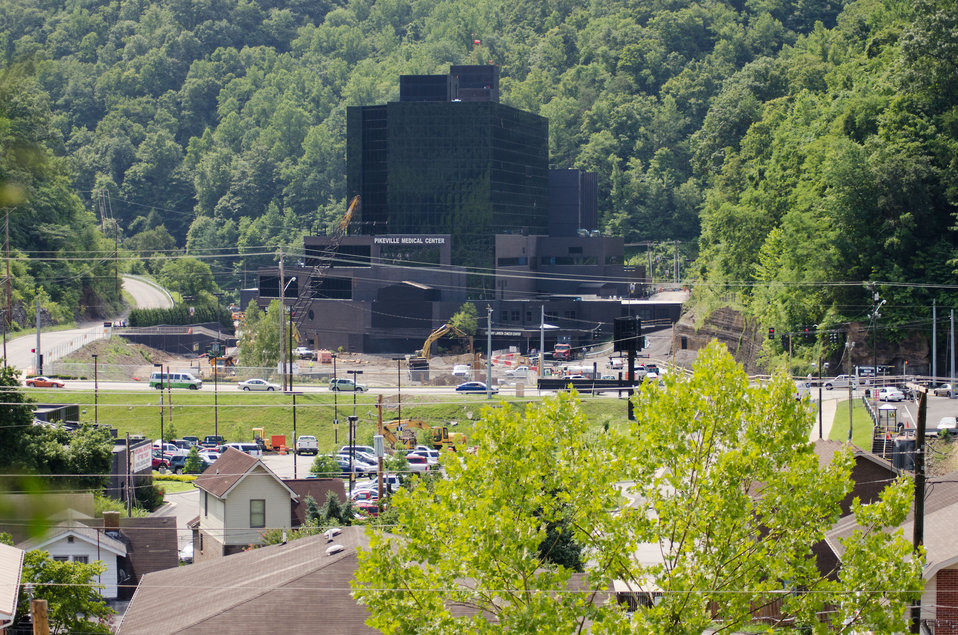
From across the horseshoe shaped town of Pikeville, KY, various buildings, parking lots, temporary walkways, and above ground construction of the Pikeville Medical Center (PMC) expansion project, on Tuesday, July 12, 2011, in Pikeville, KY. After months of infrastructure construction and rain delays, one of Kentucky’s largest American Recovery and Reinvestment Act (ARRA) projects is under way. The $44.6 million Community Facilities Loan will finance construction of a new medical office building and parking garage. The new medical office building will house outpatient surgery, endoscopy, surgical support and provide exam, waiting and office space for 23 primary and specialty care physicians. It also will contain a medical research center to support existing research – in conjunction with Pikeville College – on health disparities, genetic research related to the prevalence of cancer and other areas, including drug and treatment trials. The new parking garage with more than 1,000 spaces will be built adjacent to the new medical building, eliminating the need to shuttle patients back and forth from remote parking areas. The new garage will provide closer and easier proximity to medical and hospital services for all patients.
Wayne Rutherford, County Judge-Executive for Pike County, says funding from ARRA is a boon for his county because it will create jobs.

“This is great for Pike County’s economy. We know we have a great hospital, and with this support, it will be even better,” said Rutherford. “The unemployment rate here is above the state average and this will stimulate jobs. There will be construction, which means lots of jobs on the front end – and even more once it is built.”

Pike County is one of Kentucky’s persistent poverty counties and the current medical facility provides health care services for a rural population of more than 68,000. This project will create 1,430 direct and indirect construction jobs, in addition to 97 long-term jobs. It is scheduled to be completed in December 2012.

“This project is a prime example of the ARRA monies being utilized for much-needed health care facility expansion in an economically-depressed region of Eastern Kentucky and Appalachia,” said Tom Fern, State Director for Rural Development in Kentucky. “This hospital has received national recognition for its quality of care, and this money will allow them to expand and build upon their success and continue providing quality health care services to the region.”

PMC was named National Hospital of the Year by the American Alliance of Healthcare Providers in November 2009. The hospital was among 400 elite health care facilities to apply for this prestigious honor. To earn this recognition, PMC competed against more than 400 hospitals, including the Mayo Clinic, the John Hopkins Hospital, Cedar-Sinai Medical Center, the Cleveland Clinic, Duke University Medical Center and Vanderbilt University.

Pikeville City Manager Donovan Blackburn said the medical center is the largest employer in Pikeville and contributes nearly $2 million to the city through the payment of occupational taxes. He went on to say that Pikeville Medical’s success is also the city’s success because as other cities struggle with dwindling revenues, Pikeville has actually seen growth.

“This is a regional medical center that is very important to the city. Pikeville is a legal, financial and education hub for Eastern Kentucky and a gateway to rural communities in Virginia and West Virginia. There are half a million within a 50-mile radius – so it’s not just local people that depend on this facility,” said Blackburn. “From a regional standpoint it adds volume from a jobs standpoint. Everybody in this county knows someone or has family that works for Pikeville Medical Center.
“People in this area used to have to go out of the area for good jobs and quality medical services, but Pikeville Medical has changed that,” added Blackburn. 'And it has impact on other parts of the city’s economy – hotels, restaurants and retail. It increases the quality of life tenfold.”

The Recovery Act was designed to spend money gradually over time in order to sustain a true recovery – with peak spending to occur early this year. While the experts agree that ARRA is already responsible for creating or saving approximately two million jobs, about 75 percent of recipients that reported on their Recover Act spending indicated their projects are less than half complete, meaning there is even more job impact from those dollars to come.